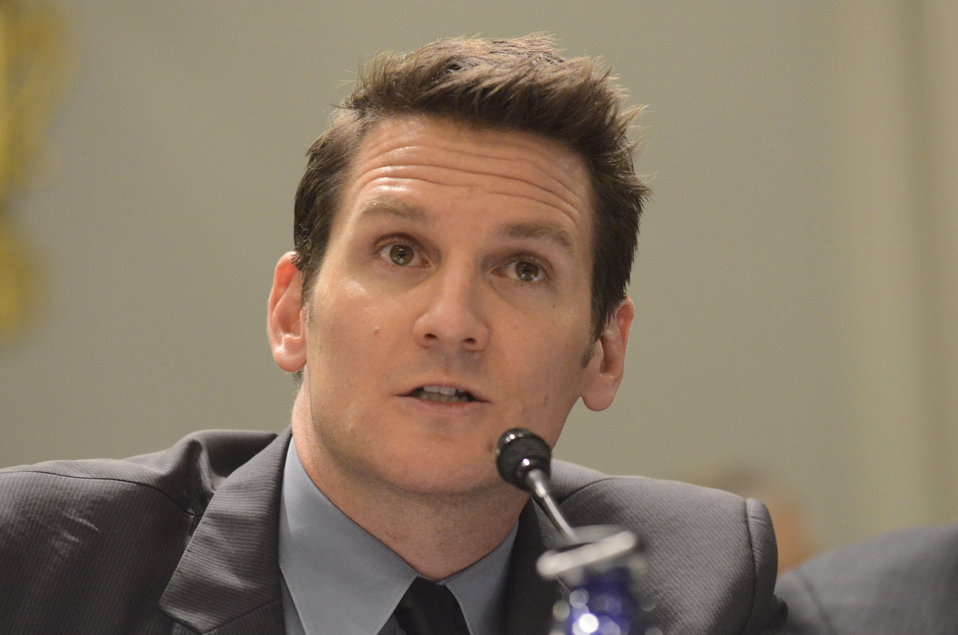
Director & Co-Founder, Reverb and Guster guitarist/singer Adam Gardner testifies on Retailers & Entertainers Lacey Implementation & Enforcement Fairness Act & Freedom from Over-Criminalization & Unjust Seizures Act at the Longworth House Office Building in Washington, D.C. on Tuesday, May 8, 2012.